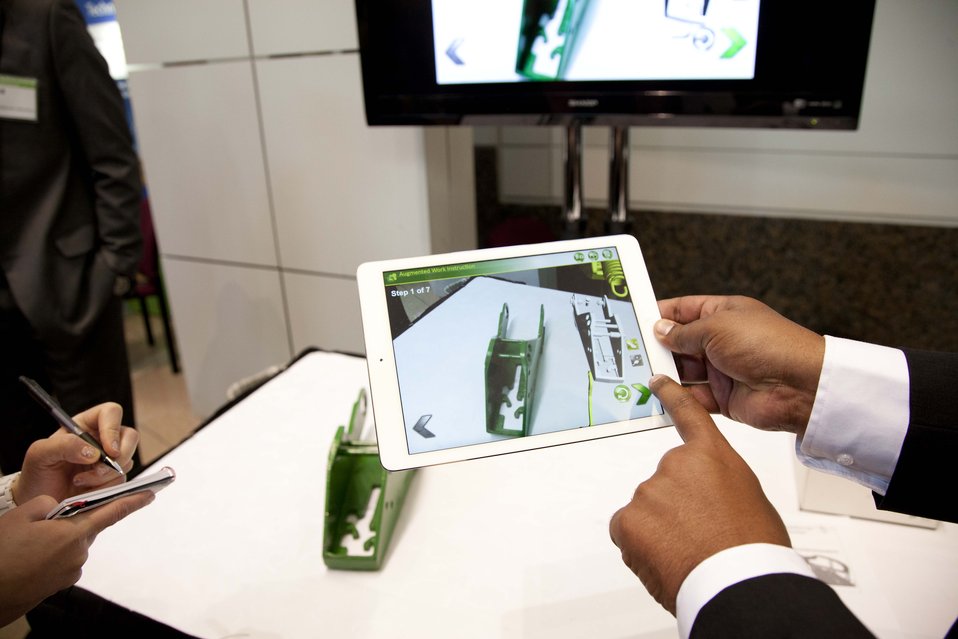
AEMC Summit

At Deere and Company, the advanced manufacturing group is exploring ways to use technology to increase efficiency and worker productivity while lowering the number of defective parts. To create the next generation of work instructions, the team is researching how to use a tablet (instead of paper instructions) to train workers on product assembly. An added benefit of using a tablet for instructions is the company can provide workers on the assembly line with additional resources to effectively do their jobs.